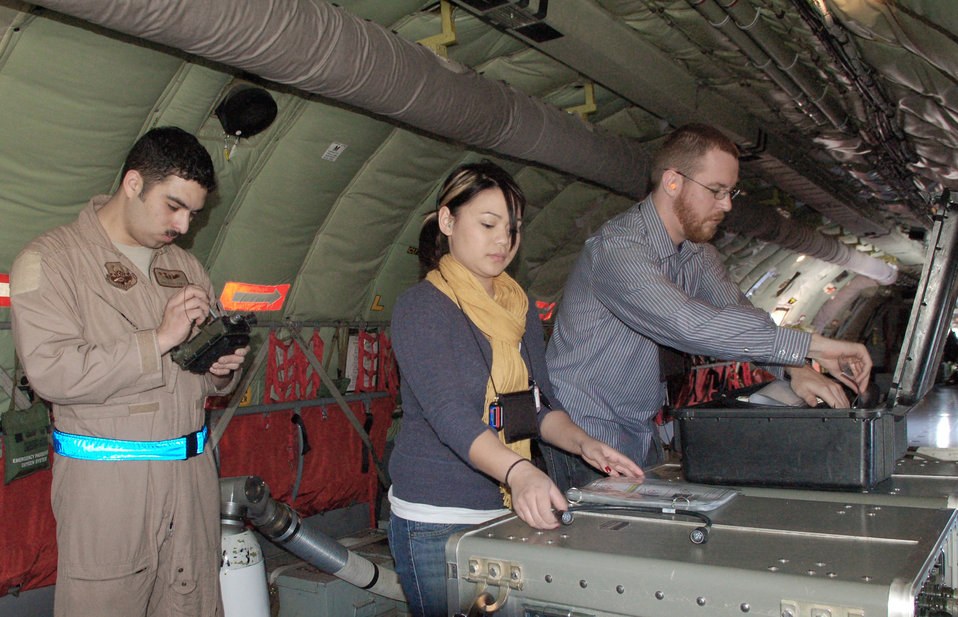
Manas KC-135s revolutionize combat operations

Senior Airman Steve Cantu troubleshoots a Roll-On-Beyond-Line-Of-Sight Enhancement System with Andrina Luczon and Keith Lareau inside a KC-135 Stratotanker March 12 at Manas Air Base, Kyrgyzstan. Airman Cantu is a KC-135 boom operator deployed from the 92nd Air Refueling Squadron at Fairchild Air Force Base, Wash. Ms. Luczon and Mr. Lareau are Northrop Grumman contractors.